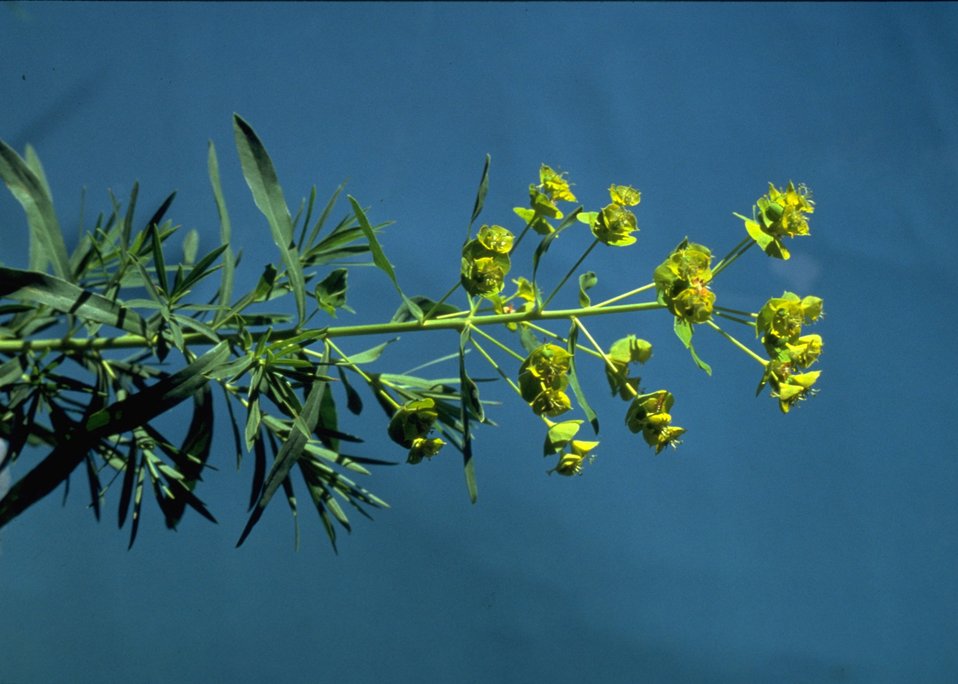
Leafy spurge deep rooted perennial.